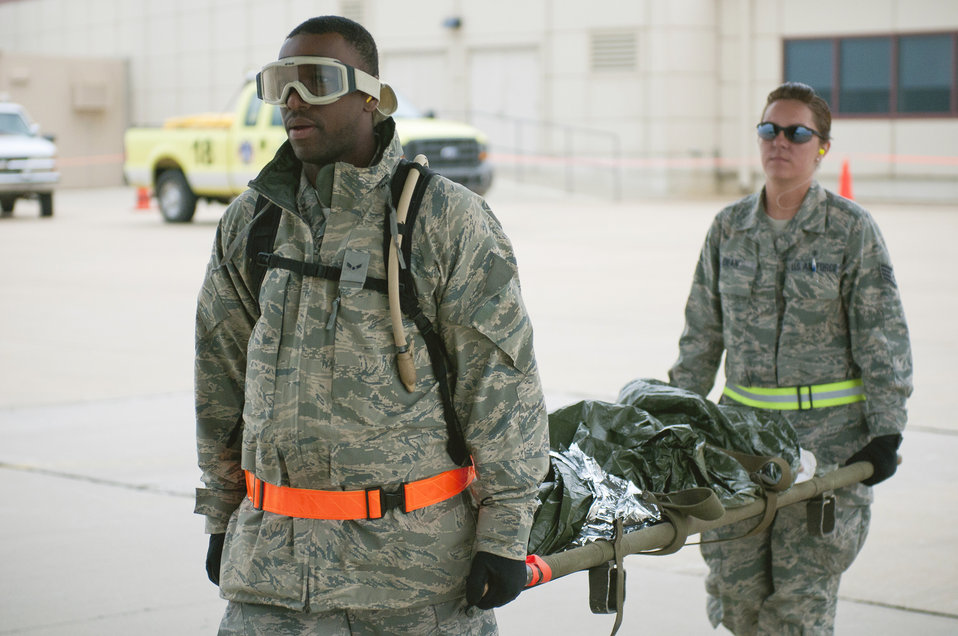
Guard Airmen establish air hub for earthquake-relief exercise

Airman 1st Class Renaldo Maxwell and Staff Sgt. Stephanie Dean carry a mannequin into the back of a C-130 Hercules May 18, 2011, at Springfield-Branson National Airport in Springfield, Mo., as part of National Level Exercise 2011. The exercise is based on a scenario involving an earthquake, requiring aeromedical evacuation of injured patients. Airman Maxwell is assigned to the 6th Medical Group at MacDill Air Force Base, Fla., and Sergeant Dean is assigned to Travis Air Force Base, Calif.,